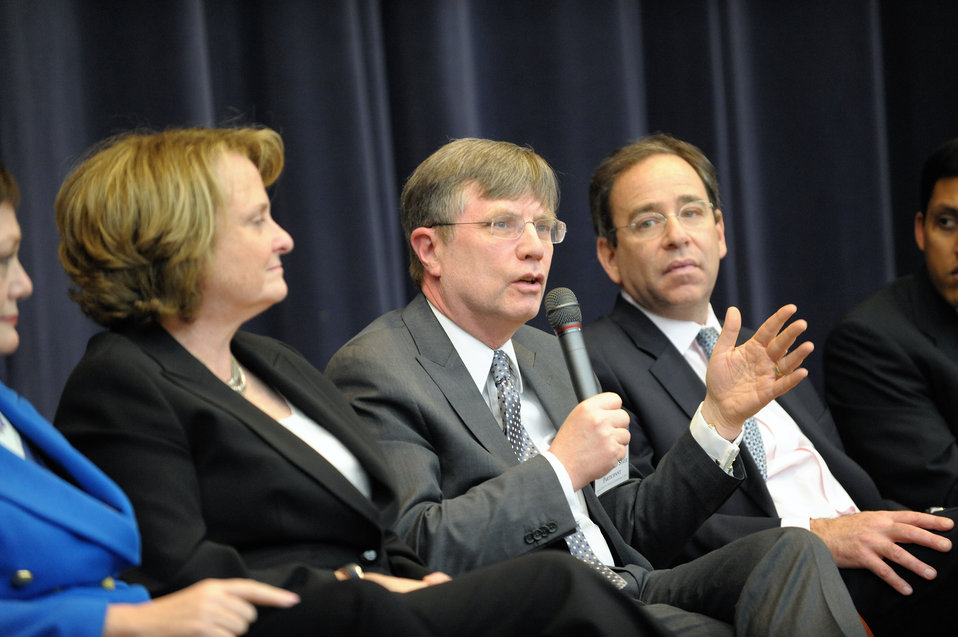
Under Secretary Kennedy Participates in the Town Hall

Under Secretary of State for Management Patrick Kennedy, center, participates in the in the Town Hall at the 2011 Global Chiefs of Mission Conference at the U.S. Department of State in Washington, D.C., on February 3, 2011. Under Secretary for Public Diplomacy and Public Affairs Judith McHale, center left; Deputy Secretary of State for Management and Resources Thomas R. Nides, center right; and USAID Administrator Rajiv Shah, right; are also pictured in the photo.